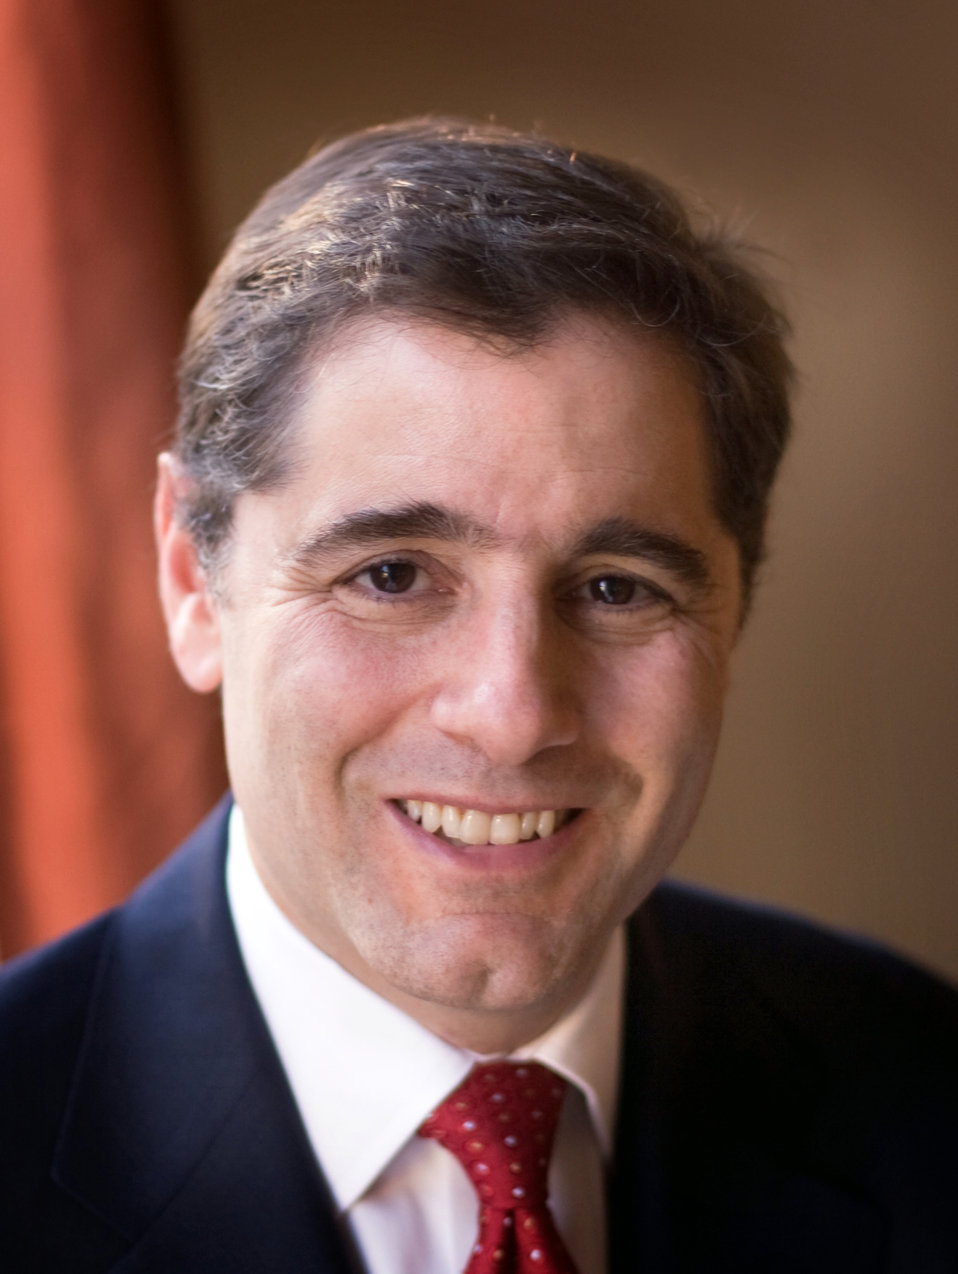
Julius Genachowski

Chairman Julius Genachowski